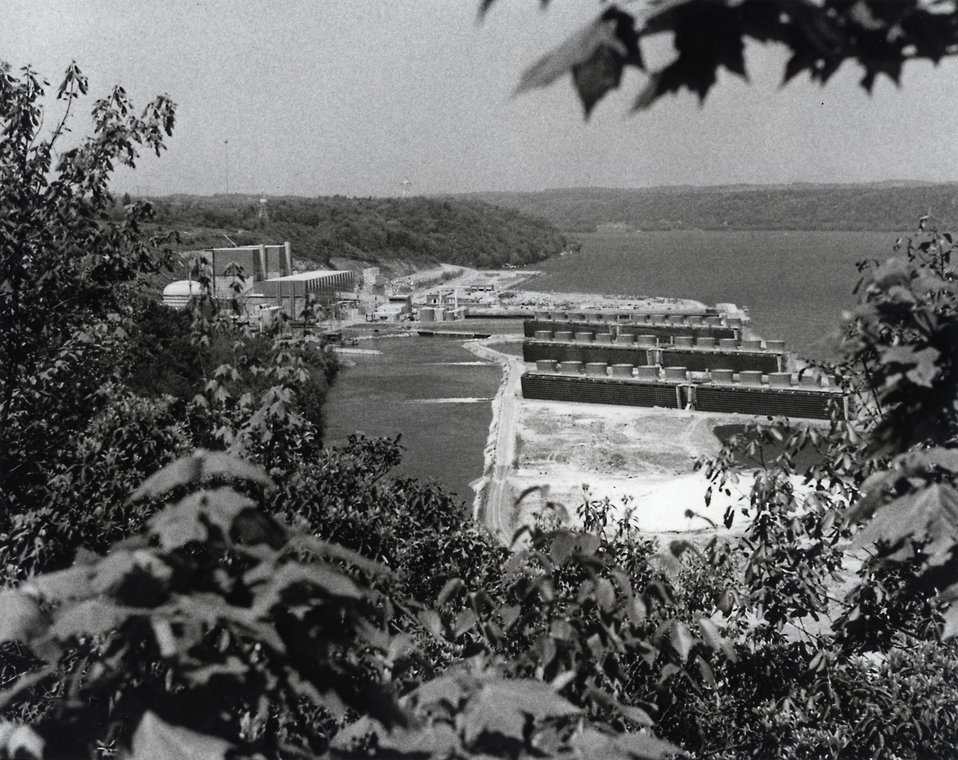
Looking up the Susquehanna River at Peach Bottom (Pa.) Atomic Power Station. Circa 1974.